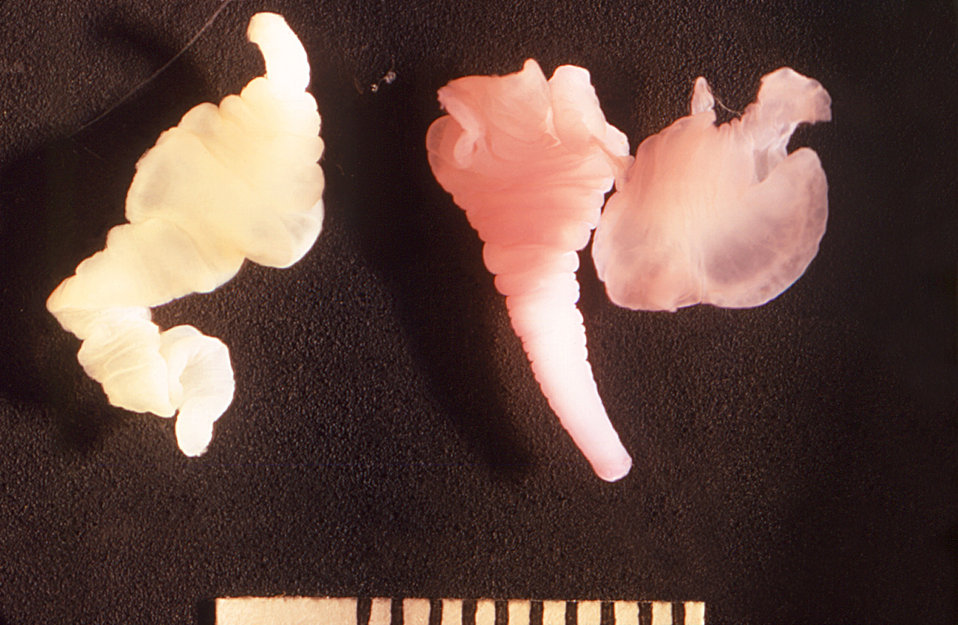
This 1973 image depicts two Taenia solium cysticerci, which represent the larval, or intermediate, immature developmental stages of this pork tapeworm.Life cycle of Taenia saginata and T. solium (See PHIL 3420 for a illustrative diagram depicting the following life cycle):